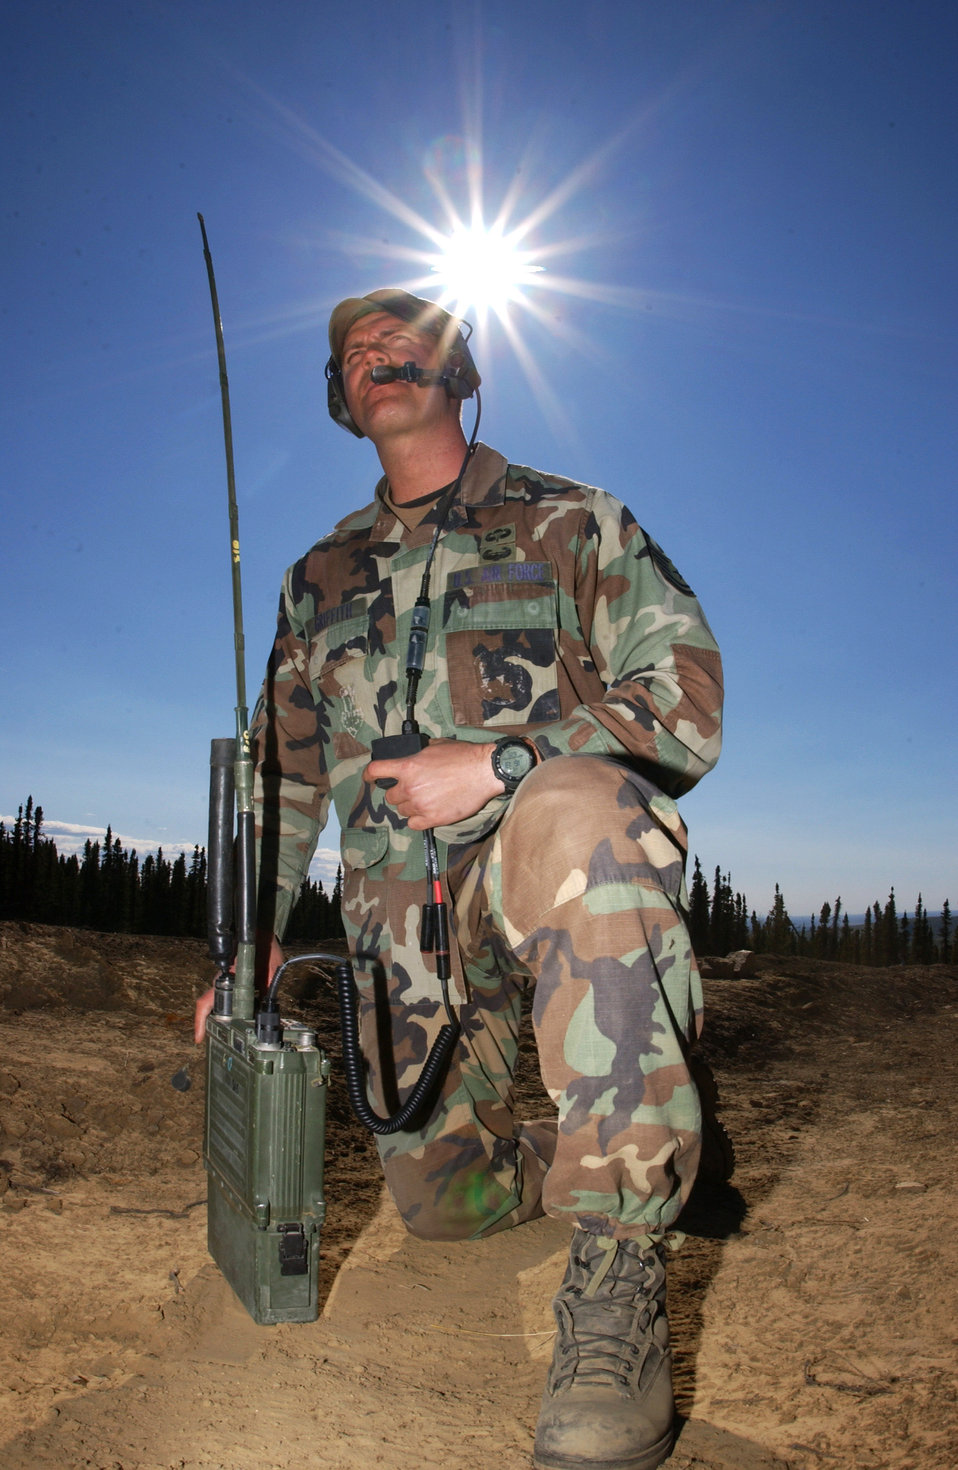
Calling in some airpower

Tech. Sgt. Seth Griffith